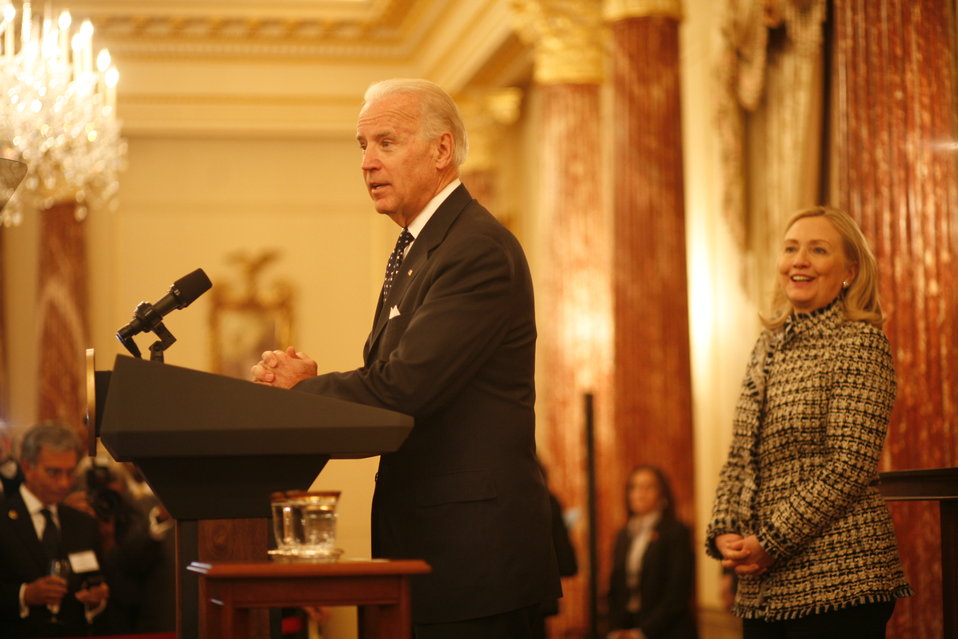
Vice President Biden Delivers Remarks

U.S. Vice President Joseph Biden delivers remarks, as U.S. Secretary of State Hillary Rodham Clinton looks on, at the first-ever State Department Global Business Conference at the U.S. Department of State in Washington, D.C., on February 21, 2012.